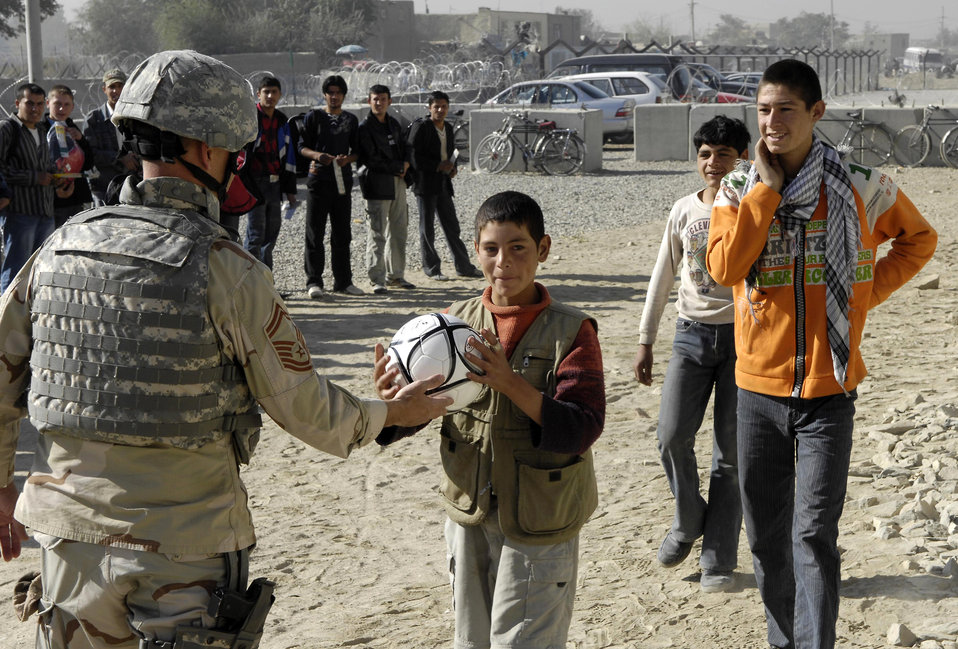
Kabul Airman brings gifts, smiles to local children

Senior Master Sgt. Eric Mullard gives a soccer ball to an Afghan child Oct. 22 at the gate to Kabul International Airport. The soccer equipment was donated to the Afghan children by businessmen and supporters from Tennessee, Georgia and California.